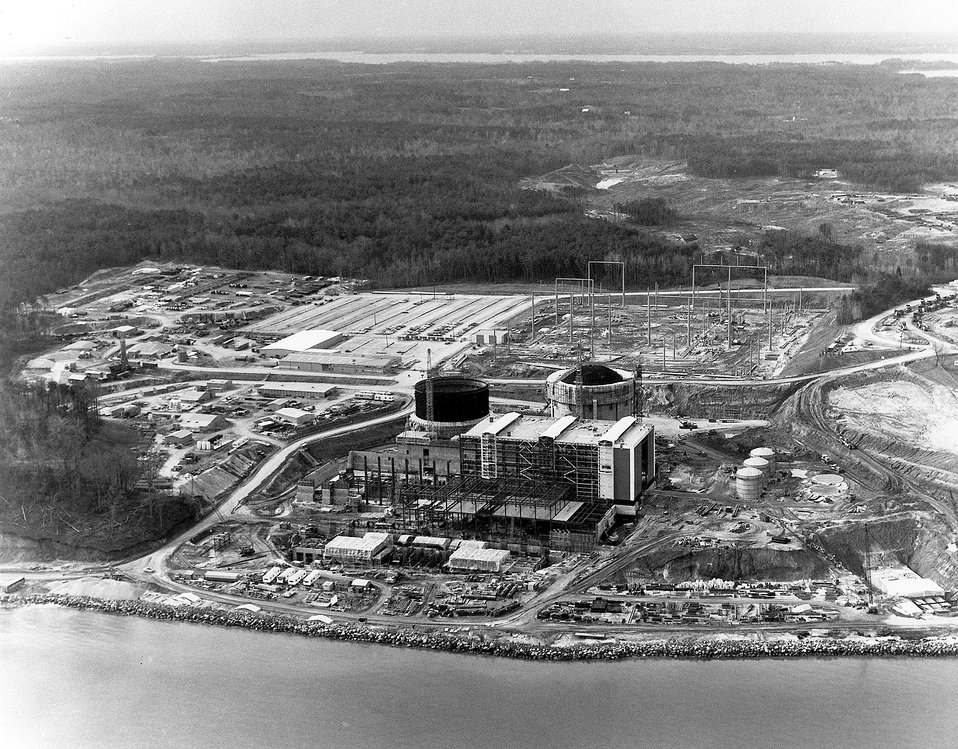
Ariel view of Baltimore Gas and Electric's Calvert Cliffs Nuclear Power Plant taken on March 6, 1971. Circa 1971.